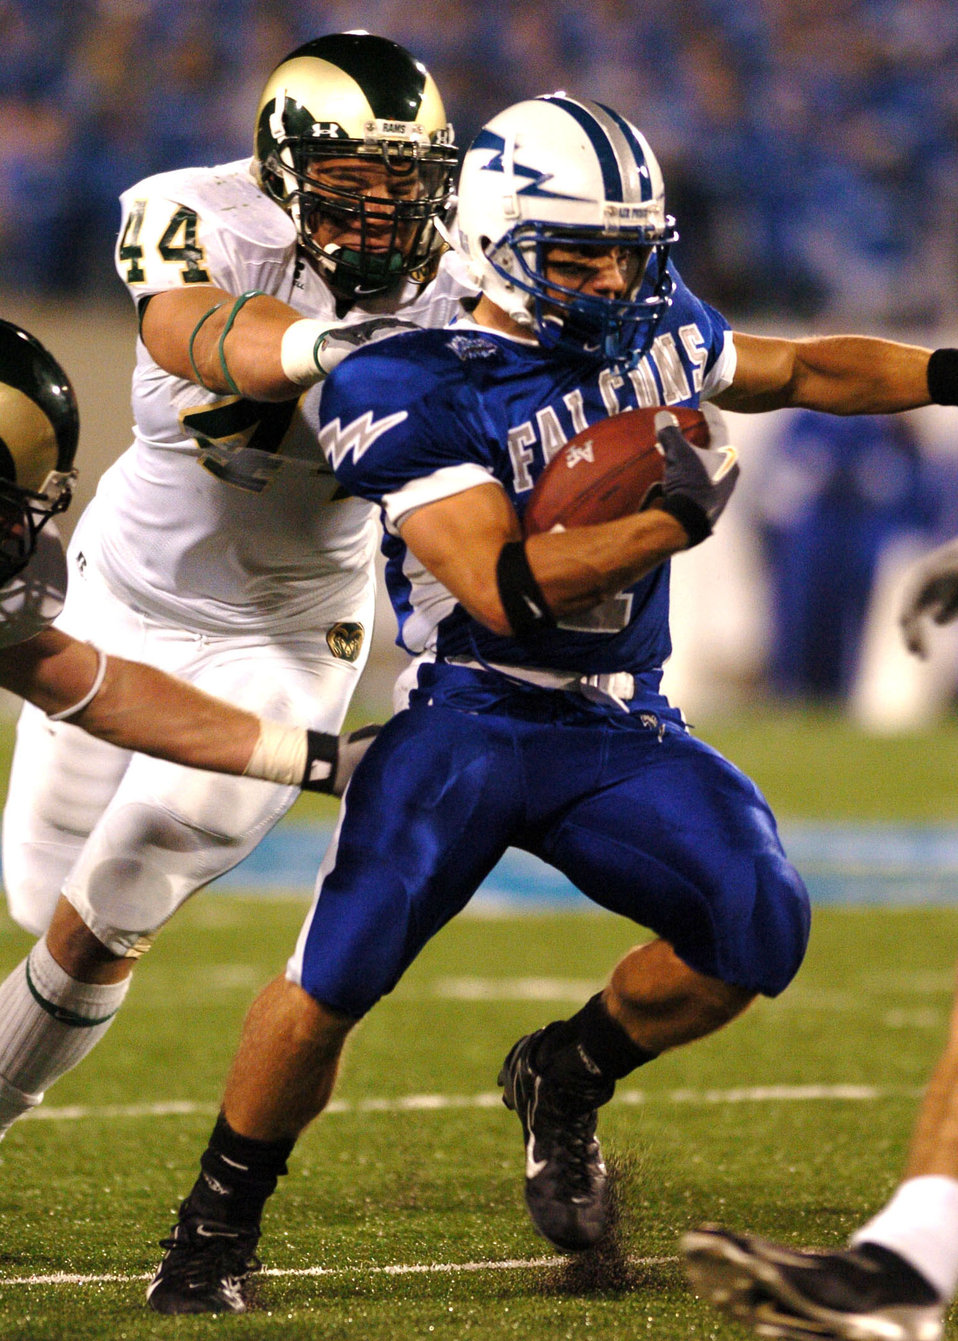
Grounded

Air Force halfback Chad Hall is caught from behind Thursday night by Colorado State defensive end Bob Vomhof in the Falcon backfield and held to no gain. Hall rushed for 104 of Air Force's 322 total yards on the ground. After trailing at halftime 21-3, Air Force scored 21 unanswered points in the second half to win, 24-21.